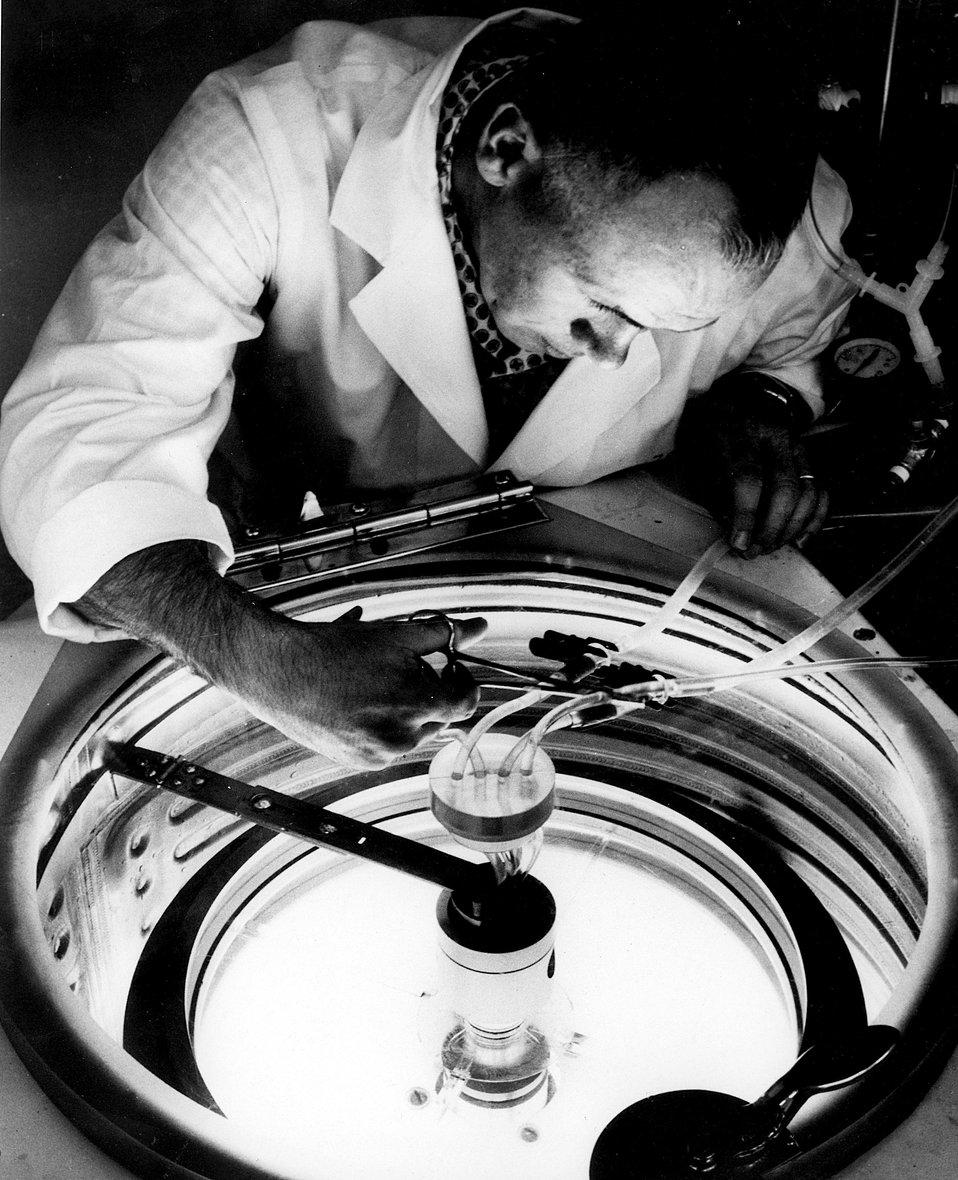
A biologist at Oak Ridge Gaseous Diffusion Plant isolates aging granules from human heart tissue in a zonal centrifuge, part of a joint AEC-NEH Bio-medical Research Program. Circa 1965.